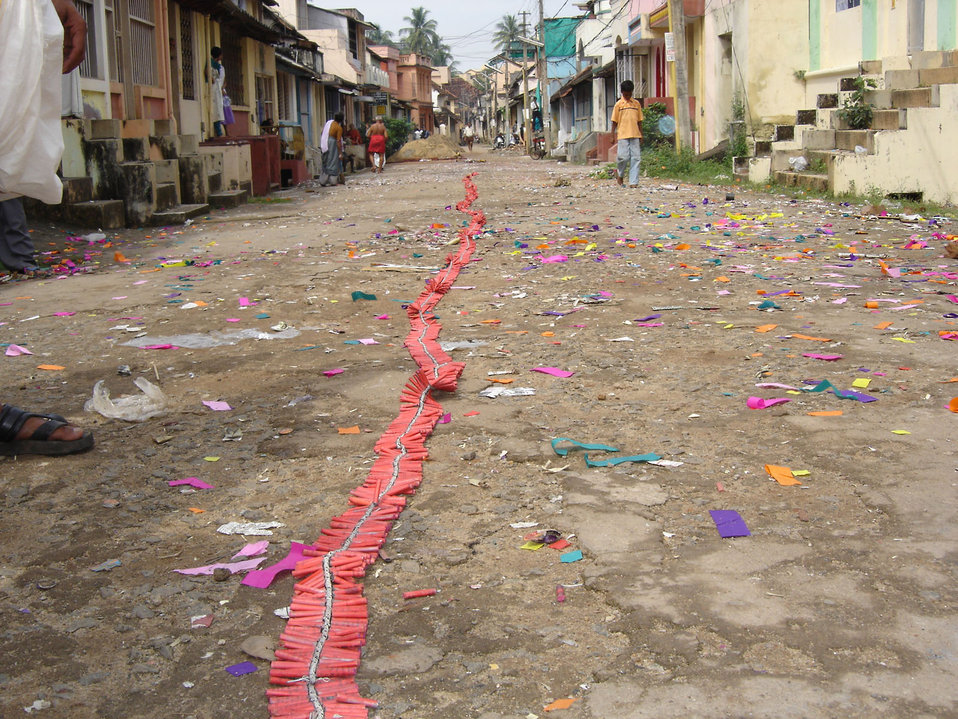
1000 mala firecracker